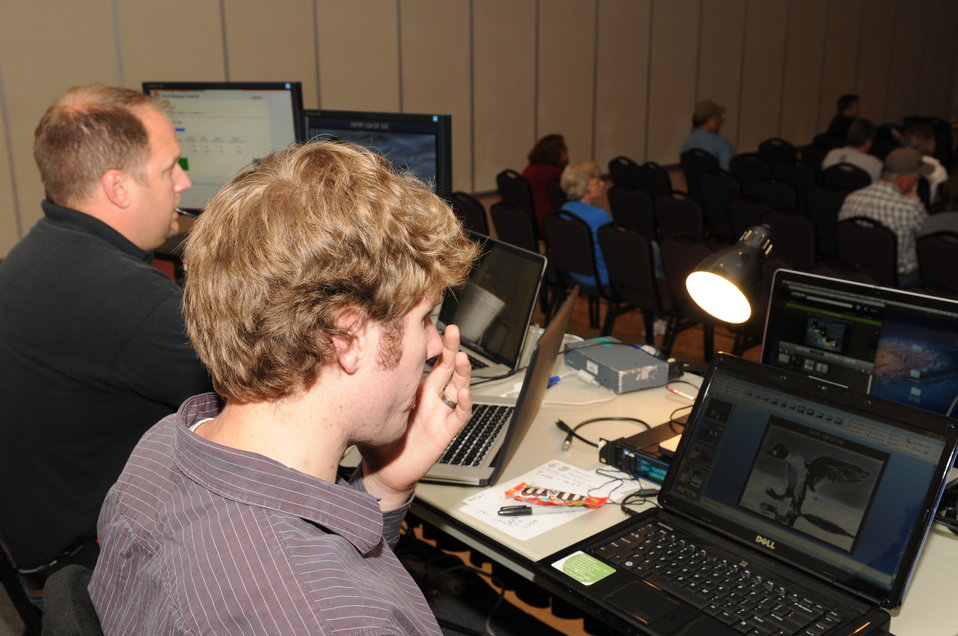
Behind the Scenes

The U.S. Fish & Wildlife Service sponsored the 2012 Federal Duck Stamp Art Contest September 28 and 29 in Ogden, Utah, at Weber State University. A panel of five judges was responsible for choosing the art work used to design the 2013-2014 Migratory Bird Hunting and Conservation Stamp.